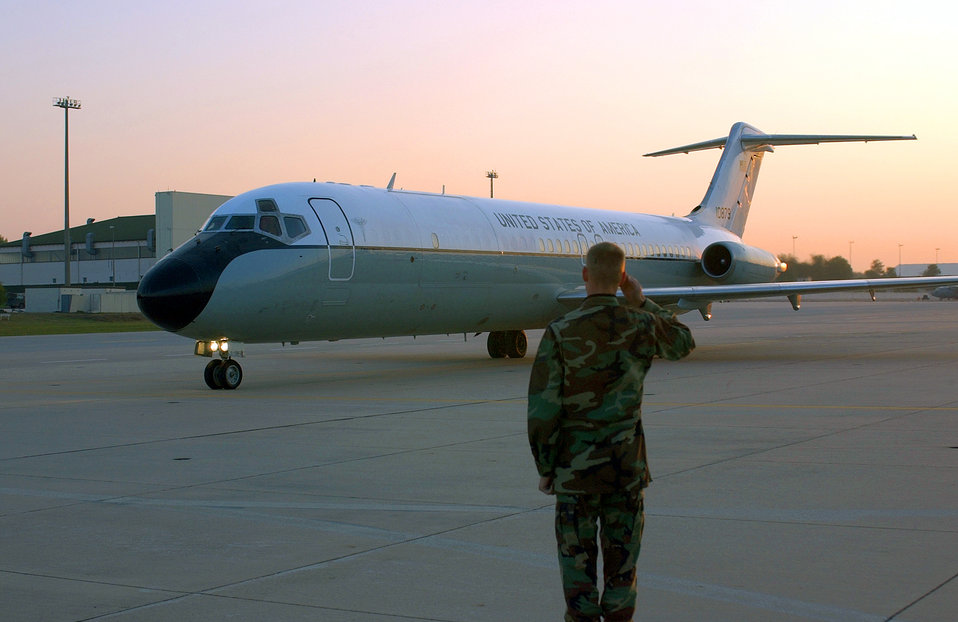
Salute

RAMSTEIN AIR BASE, Germany -- Airman 1st Class Gentry Koepp salutes the last C-9 Nightingale aeromedical evacuation from here Sept. 27. Koepp is a crew chief assigned to the 86th Aircraft Maintenance Squadron. The 75th Airlift Squadron crew flew the C-9A to Scott Air Force Base, Ill., where it will be transferred to the Air Force Reserve.